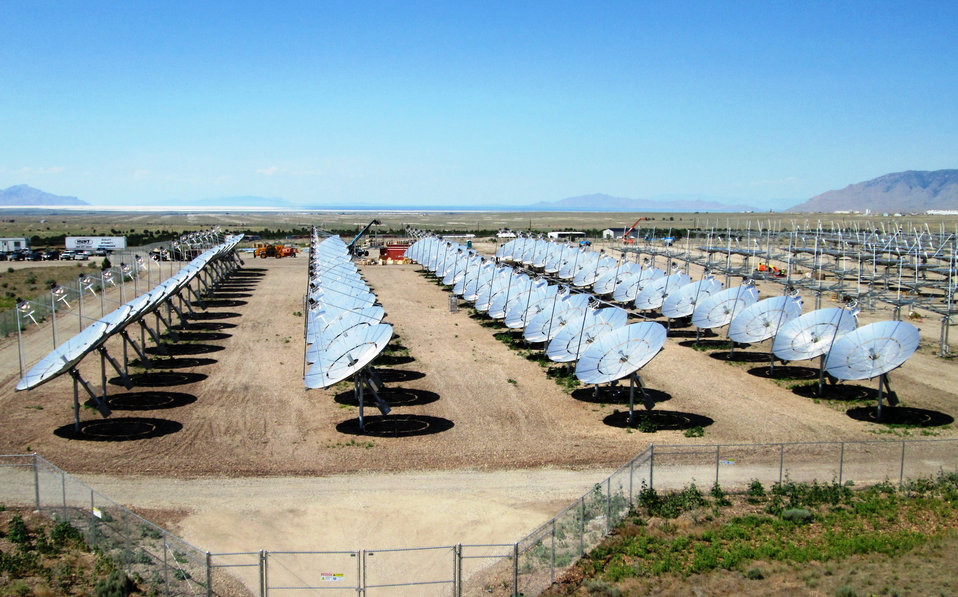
Solar farm continues to grow

Several rows of solar dishes point toward the sun July 2, 2013, at Tooele Army Depot in Utah, part of a $9.6 million dollar project managed by the U.S. Army Corps of Engineers Sacramento District. The project, which includes the placement of more than 420 solar dishes on 3.5 acres, will provide the installation with 1.5 megawatts of energy once complete - enough to power 300 to 400 homes. Each solar dish is a mirrored, parabolic dish which reflects and focuses the heat from the sun onto a Stirling engine to generate electricity.